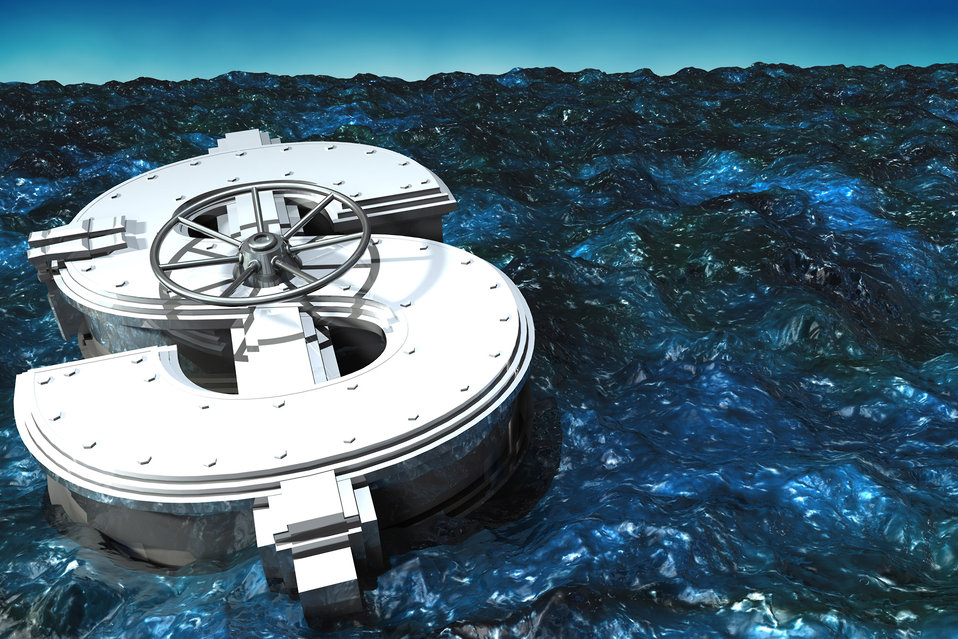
Safe in the form of dollar

Safe swimming in the sea.